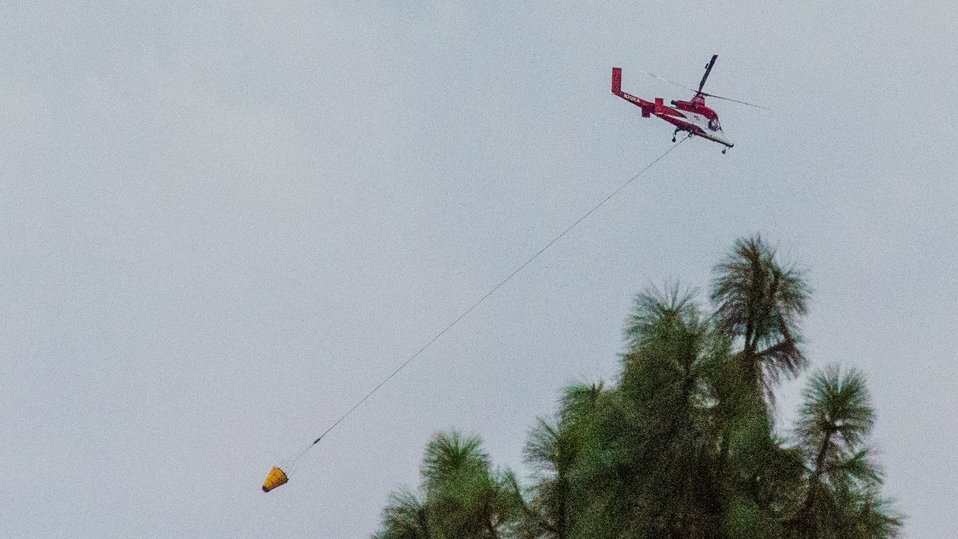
A Kaman K-MAX helicopter, with two counter-rotating intermeshing rotors (synchropter), returns to base or “dip point” to reload the flexible bucket (cabled below it) with water for an aerial drop where needed during the Big Windy Complex Wildlands Fire, 15 miles west of Interstate-5 and East Northeast of Galice, Oregon, with the Incident Command Post (ICP) in Merlin, OR on Thursday, Aug 8, 2013. This type of helicopter is designed for lifting external loads of more than 6,000 pounds. There is no tail rotor, and its design contributes to a natural hover characteristic. Reloading the bucket with water does not require the aircraft to land, saving time and fuel.